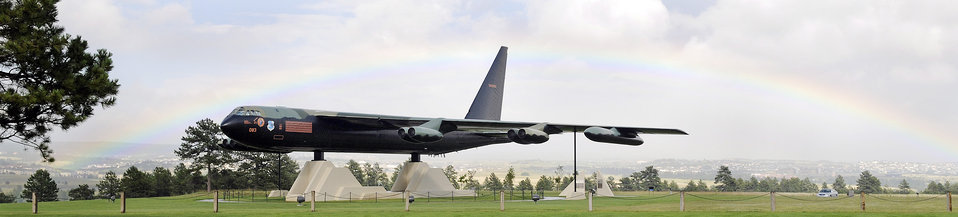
B-52D Static Display

U.S. Air Force Academy, CO -- Under the arch of a late afternoon rainbow Jul 30 at the U.S. Air Force Academy, is B-52D